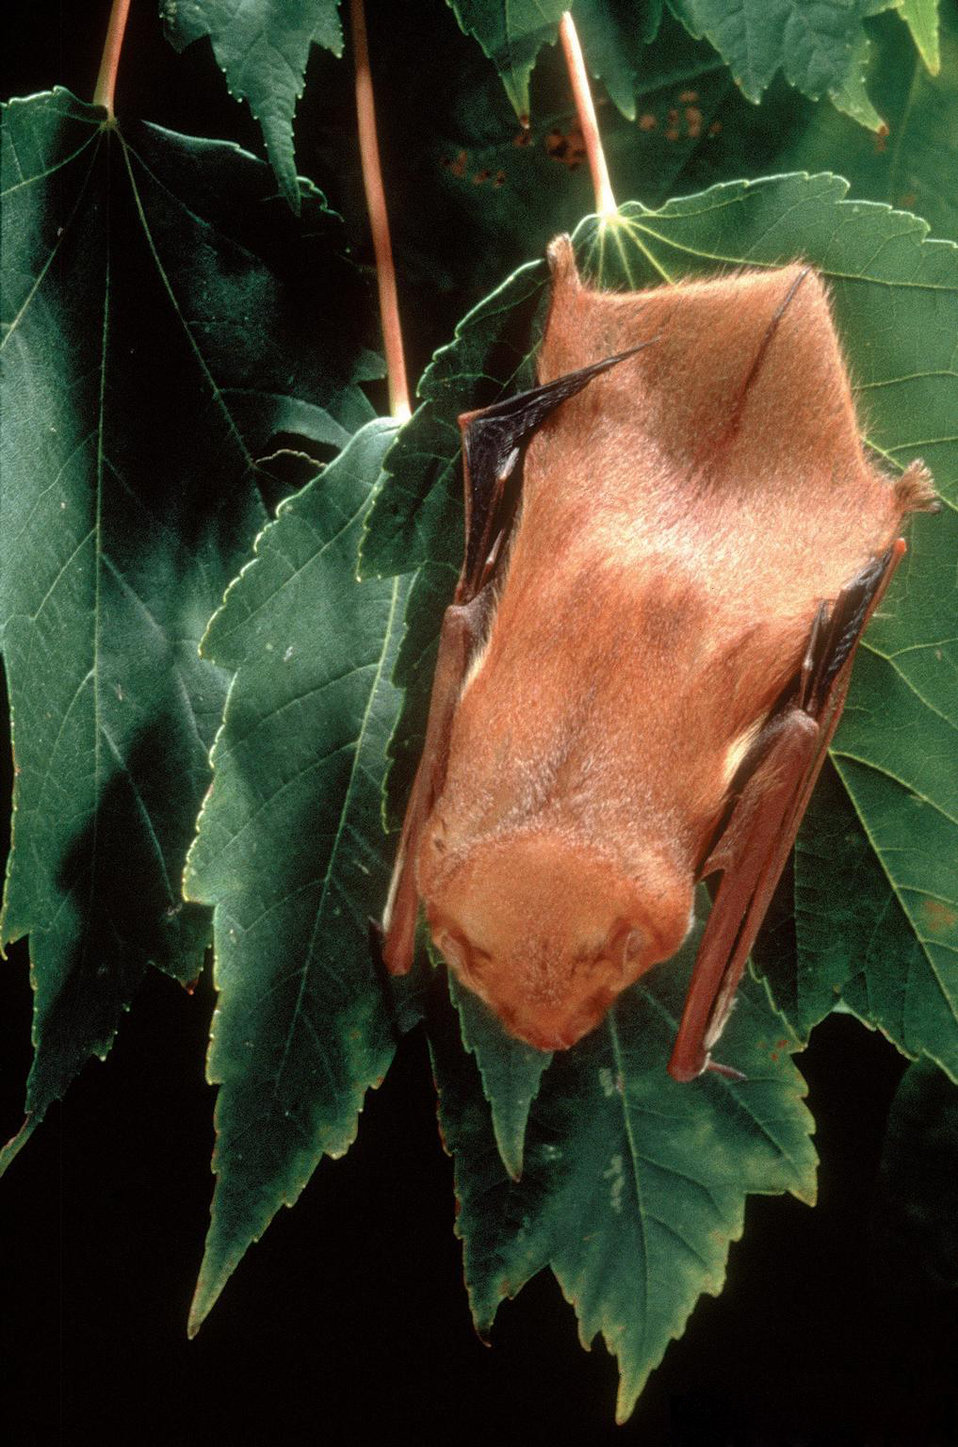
An eastern red bat rests on a leaf. Bats are one of nature’s many pollinators for flowers and crops and are crucial in production for fruits and vegetables.